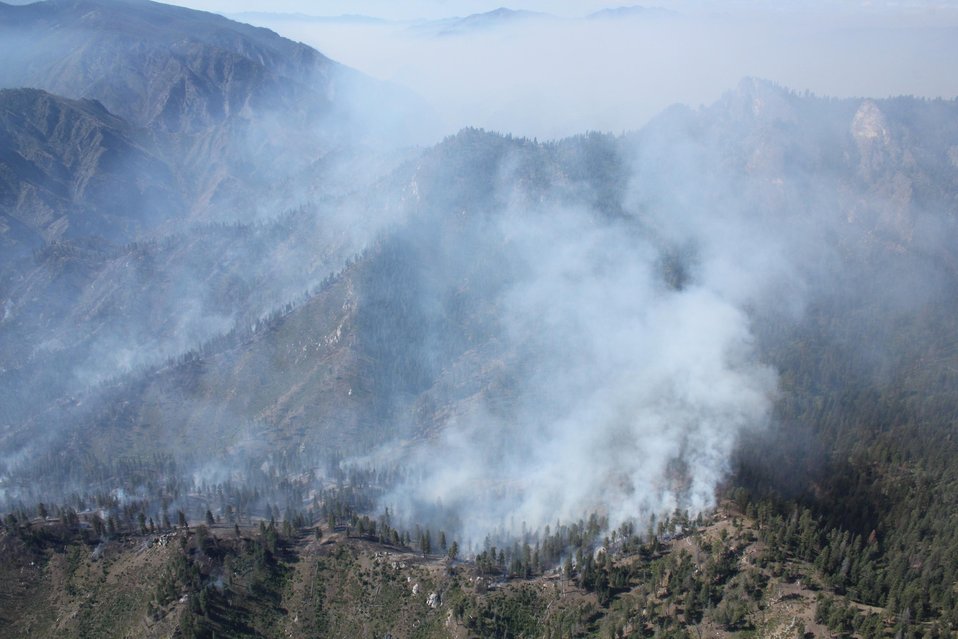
The Papoose Fire in the Salmon-Challis National Forest in Idaho began on Jul. 8, 2013 by lightning has consumed approximately 6, 504 acres.